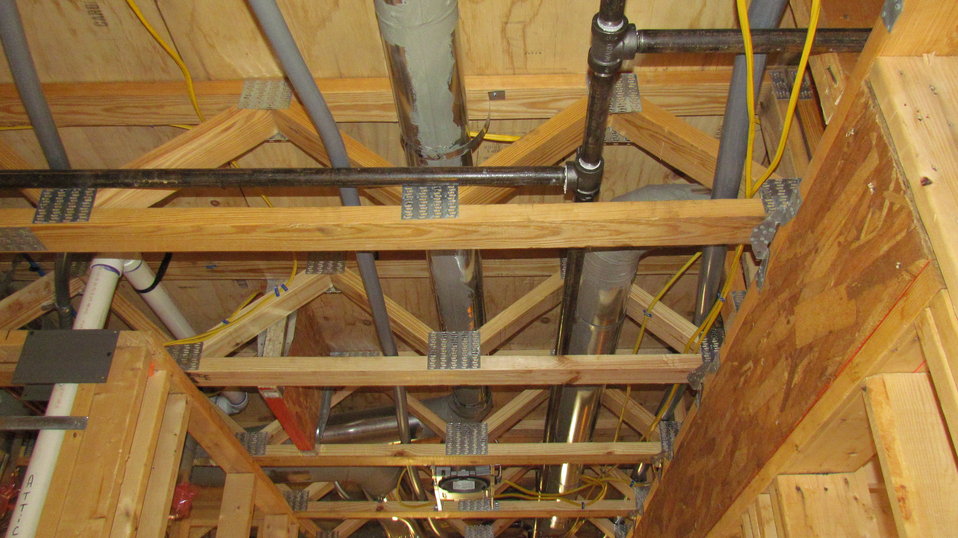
The house is equipped several fire safety systems. This photo shows a portion of the fire sprinkler system that is installed throughout the facility. Additionally the facility has fire and smoke detectors throughout the structure that immediately notify NIST’s Fire Department if abnormal conditions are detected.